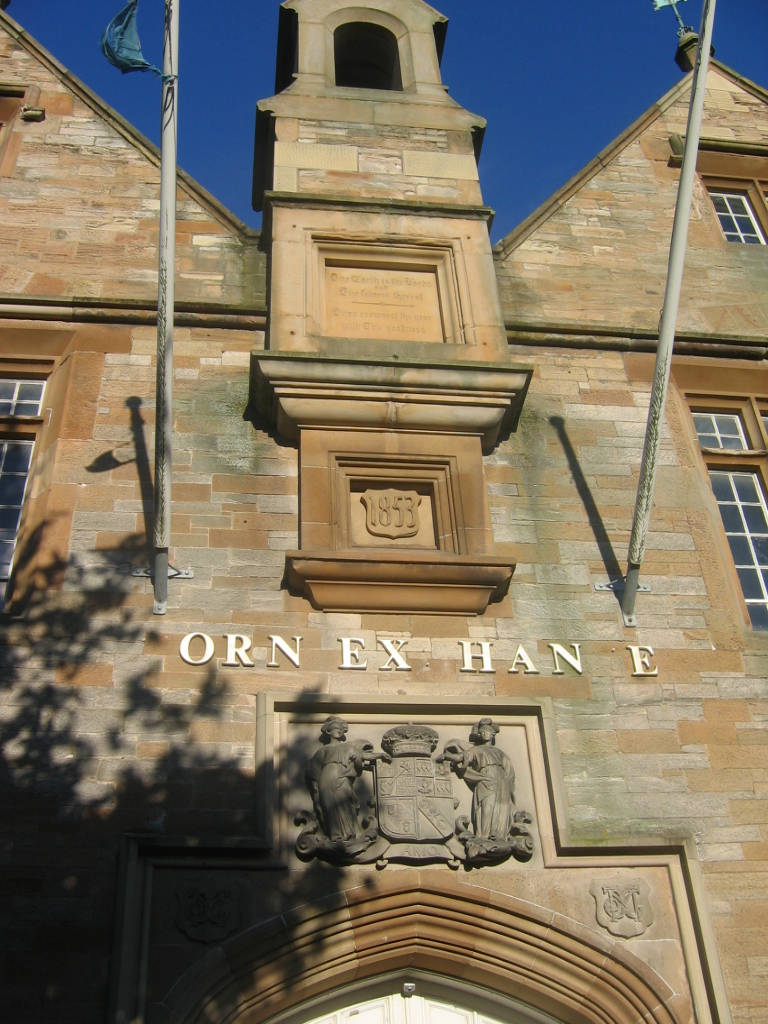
Corn Exchange, Dalkeith, Midlothian, Scotland